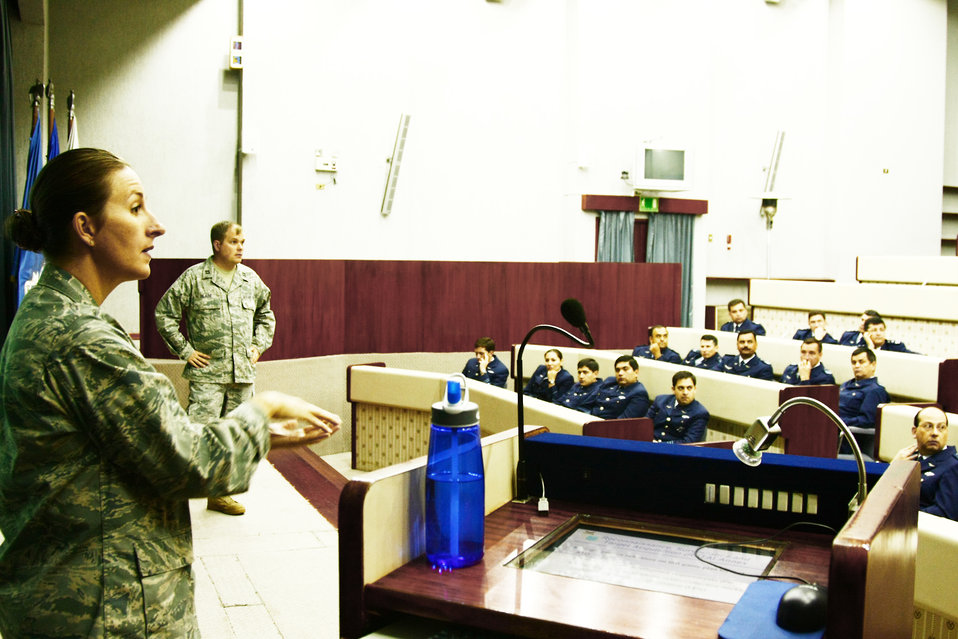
Team exchanges ideas on public affairs, air operations processes with Chilean air force

Maj. Jana Nyerges and Capt. Rick Glade brief students at the Chilean air war college during a Cooperation Team-One exchange Oct. 16, 2009, in Santiago, Chile. The team was in Chile to exchange ideas and best practices with members of the Chilean air force prior to participating in Exercise Salitre in October. Major Nyerges and Captain Glade are air operations center experts with 12th Air Force.